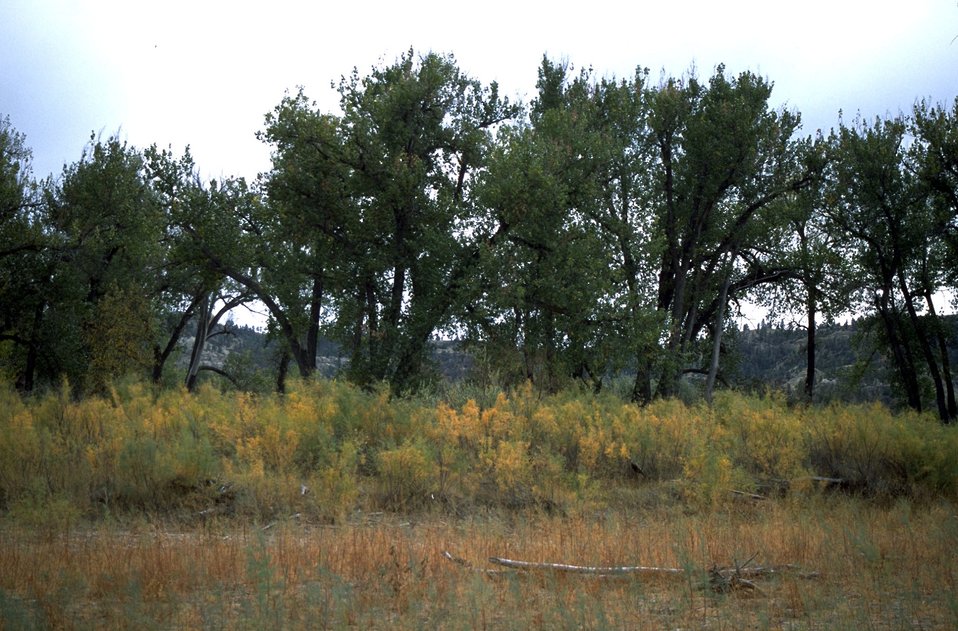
Cottonwood and salt cedar trees along the Yellowstone River at Howrey Island Recreation Area